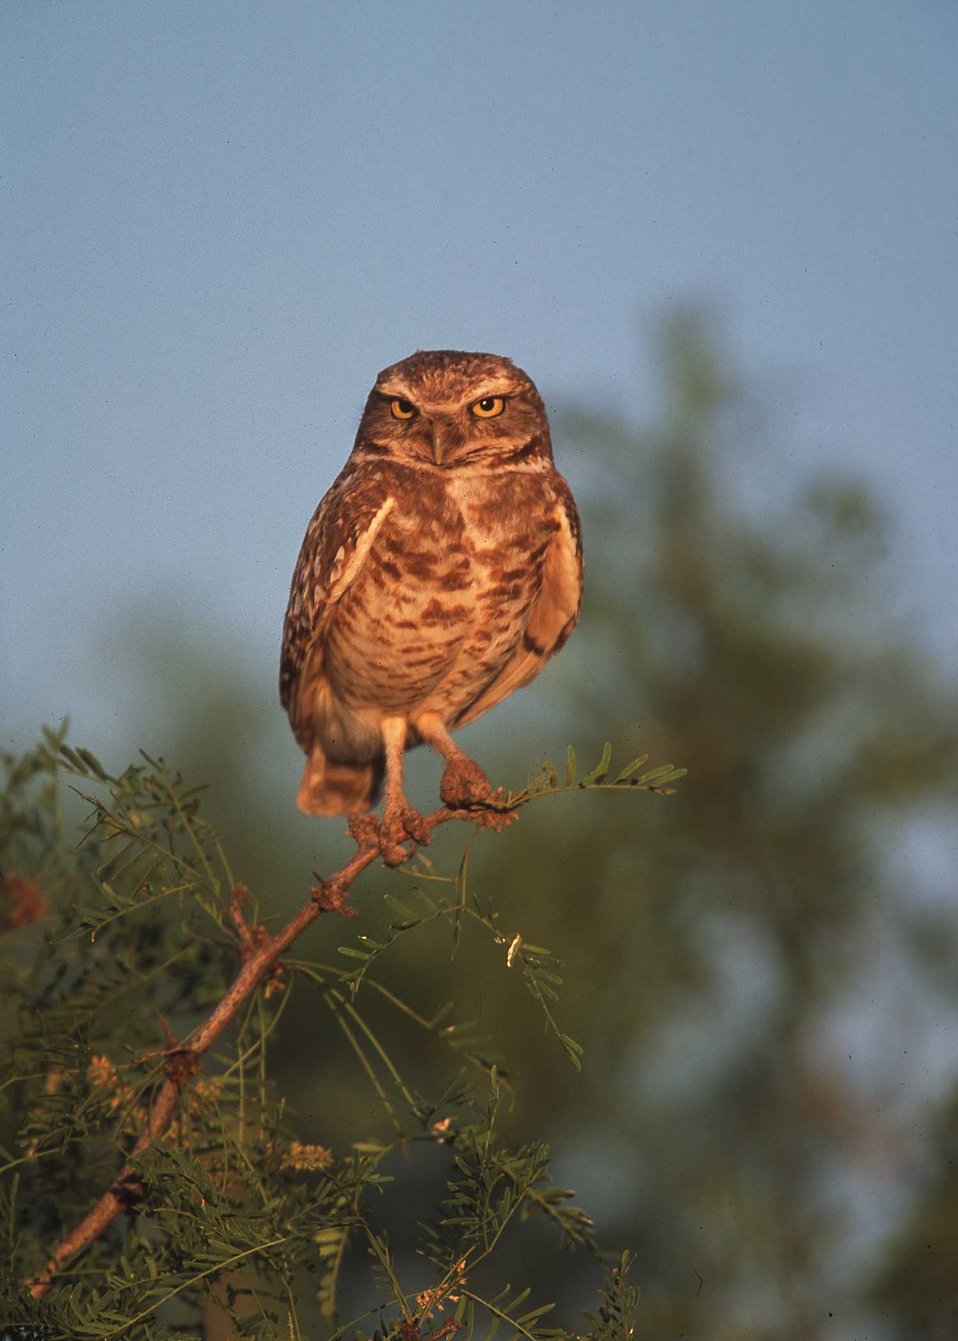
Burrowing owl in eastern New Mexico.